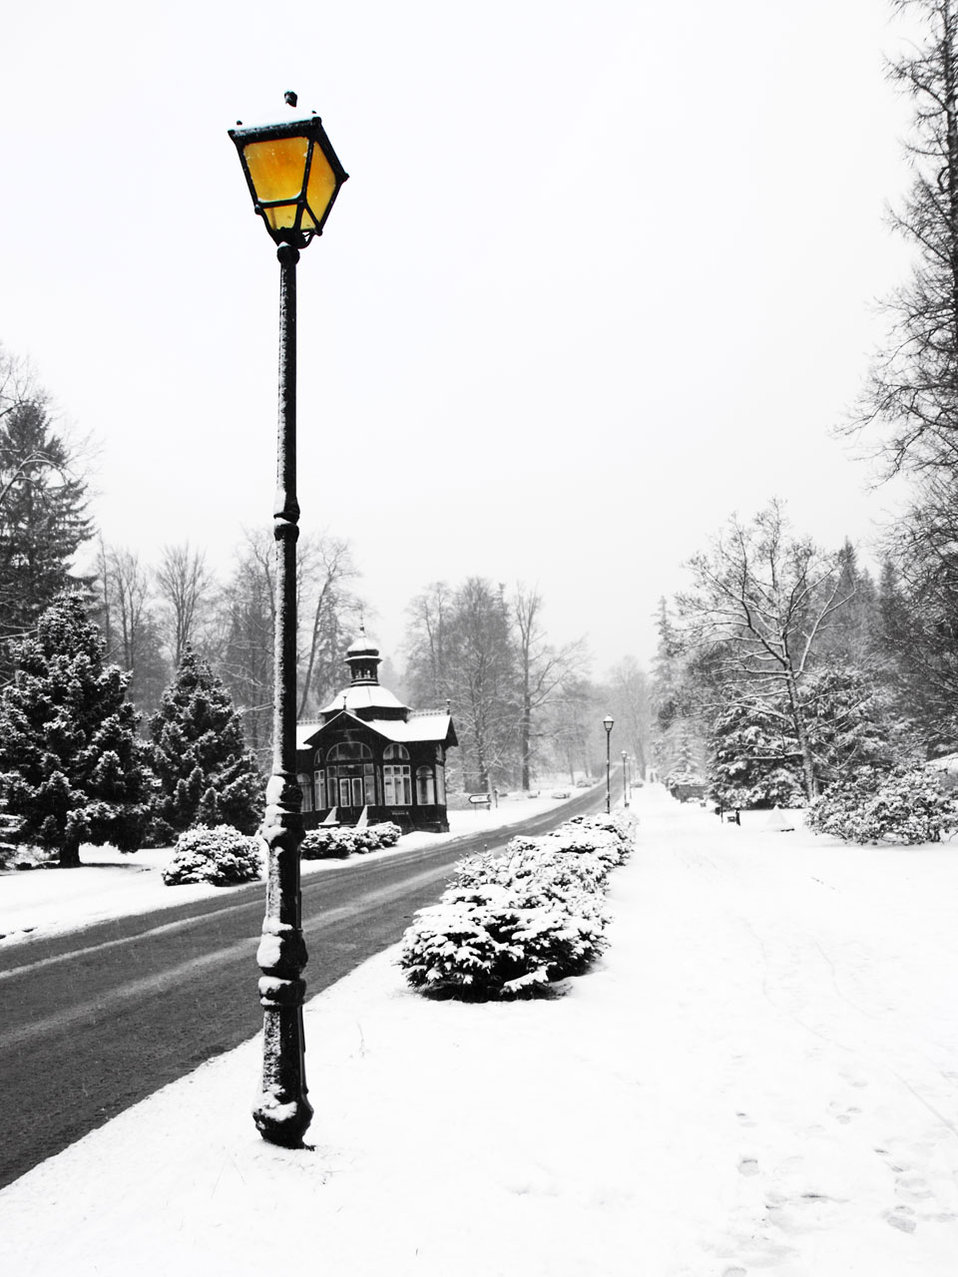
Street lamp in winter

Street lamp in karlova studanka in winter - czech republic.